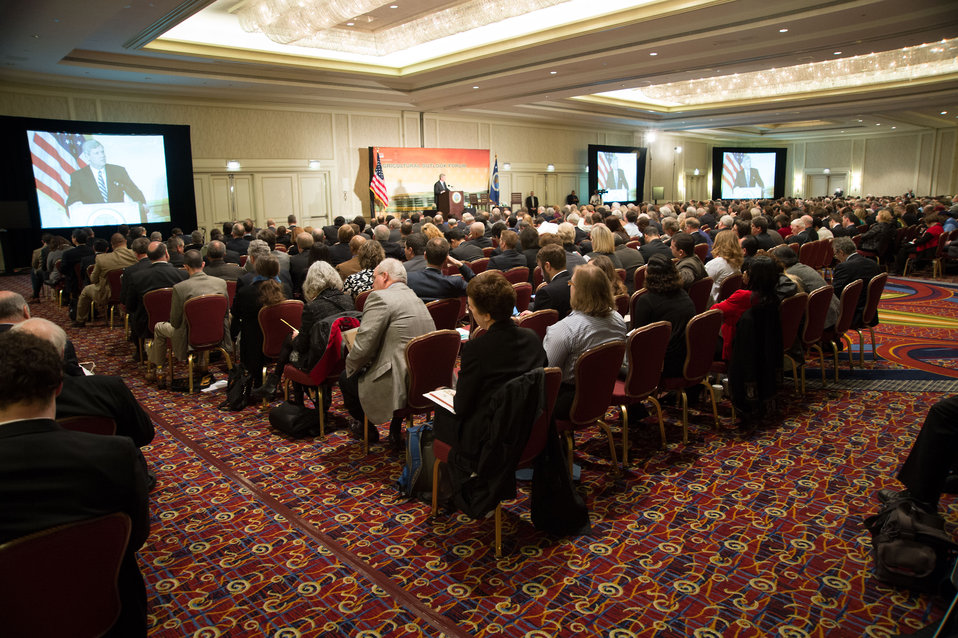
Agriculture Secretary Tom Vilsack makes remarks at the 2014 Agricultural Outlook Conference on Thursday, Feb. 20, 2014 in Arlington, VA. The U.S. Department of Agriculture's (USDA) annual Agricultural Outlook Forum brings together the agricultural community to discuss policy, trade, science, rural development, and the economic outlook for the coming year. The Forum also focuses on forestry, health and nutrition issues, and the changing dynamics and face of rural America.